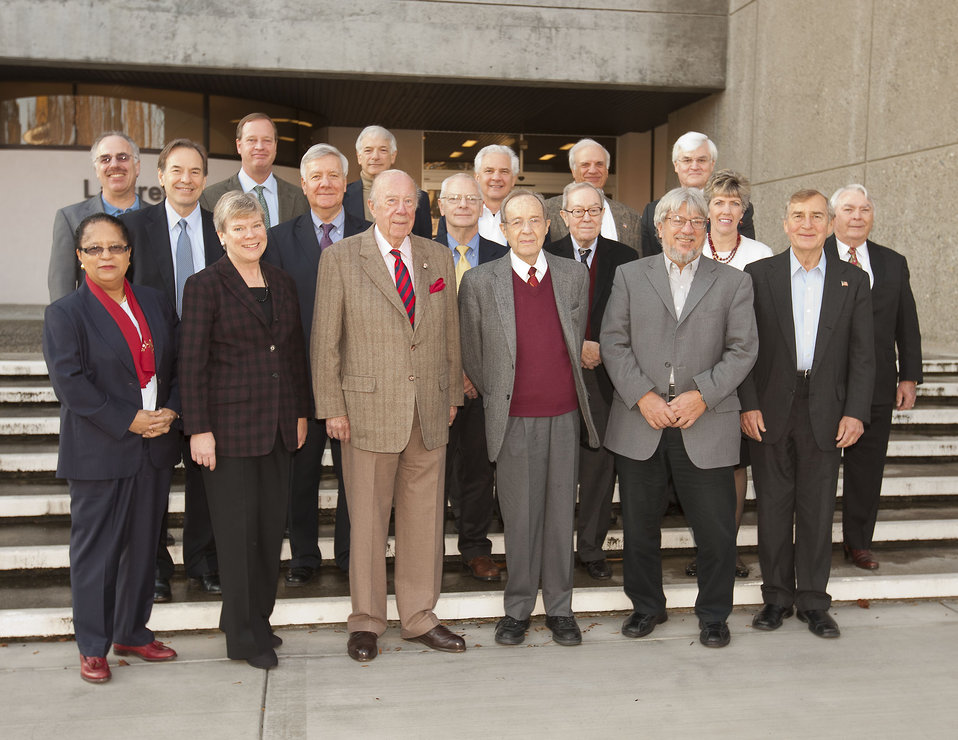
Acting Under Secretary Gottemoeller Poses for a Photo With the ISAB Committee

Acting Under Secretary of State for Arms Control and International Security Rose Gottemoeller poses for a photo with the International Security Advisory Board members at the Lawrence Livermore National Laboratory in Livermore, California, on February 8, 2012. Pictured in the photo, first row, left to right: Dr. Shirley Ann Jackson, Acting Under Secretary Rose Gottemoeller, Former Secretary of State George Schultz, Dr. William Perry, Dr. Michael Anastasio, Dr. Graham Allison; second row, from left to right, Dr. Bruce Blair, Douglas Bereuter, Walter Slocombe, Ambassador James Goodby, Dr. Joan B. Woodard, Robert Terry Everett; third row, from left to right, Dr. Raymond Jeanloz, William H. Tobey, Ambassador Robert Gallucci, Joseph Cirincione, Dr. James A. Tegnelia, and Lawrence Livermore Lab Director Penrose “Parney” Albright. [Lawrence Livermore National Laboratory by Jacqueline McBride]